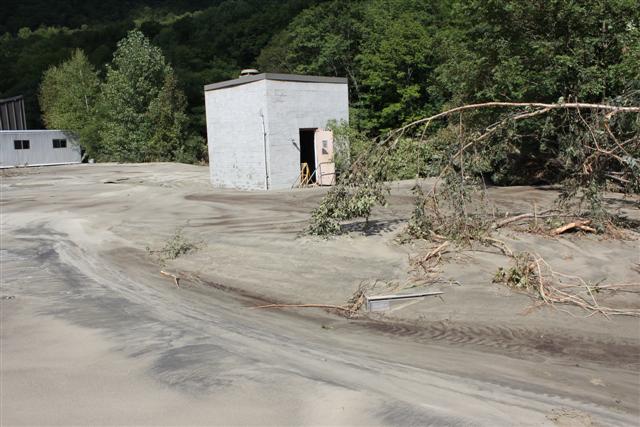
Damage after Irene

Damage in Bethel, VT. after Hurricane Irene came through on Sunday, August 28, 2011.